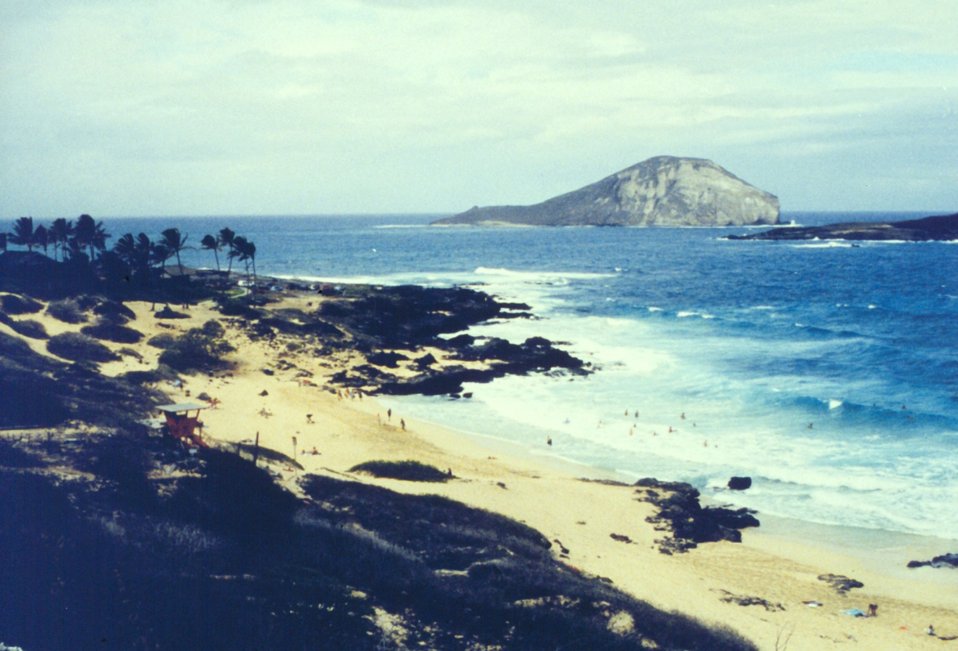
Commonly called Rabbit Island because of its shape offshore of Waimanalo Bay.